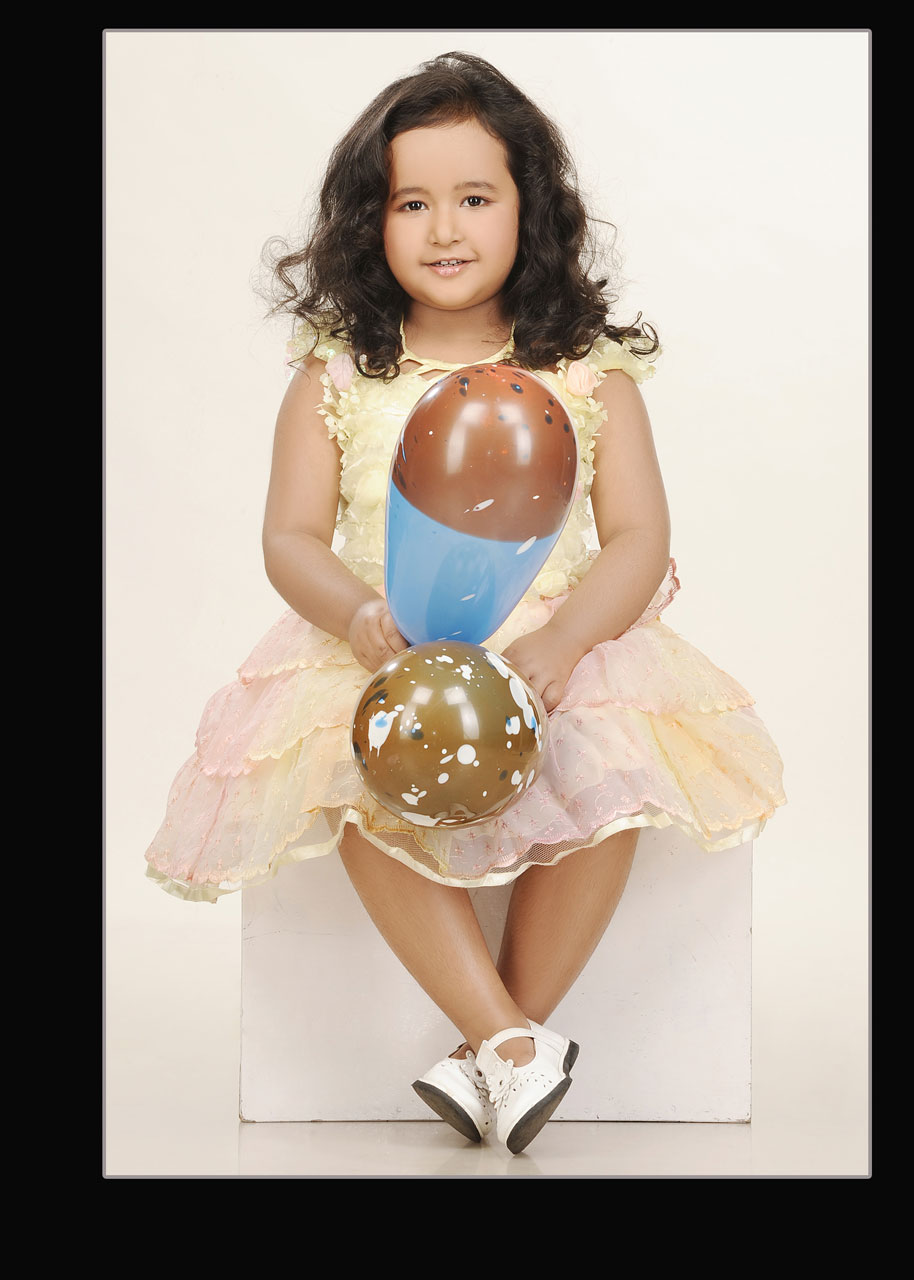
Dona roy tariang. dona is a jolly girl from guwahati. born to a jaintia mother and bengali father, dona is a little jolly girl..